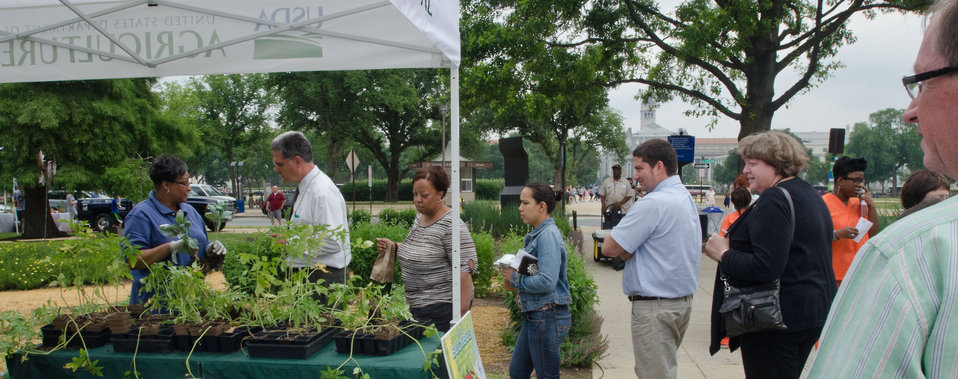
Agriculture Executive Master Gardner Judy Akinola, tries to keep up with long lines of people wanting ‘Abraham Lincoln’ Tomato plants during the giveaway of hundreds of fruit and vegetable seedlings to encourage people to get involved in community gardening and sharing their harvest with those in need, during the U.S. Department of Agriculture (USDA) summer farmers market opening of its 17th season at the USDA Whitten Building east parking lot in Washington, D.C. on Friday, May 31, 2012. USDA volunteers cultivated the seedlings. This year's theme is Grow, Healthy, Eat Healthy and Be Healthy. USDA and Fuel Up to Play 60, in partnership with the National Dairy Council and the National Football League, invited residence, visitors and local school children to participate in opening day activities. Hip Hop Public Health featuring Easy A.D. from Cold Crush Brothers and disk jockey Artie Green play music and invite people to get up on stage to dance or hula hoop to get active. D.C. Truck Farm helps people know from what plants, herbs, fruit and produce come from by giving tail-gate tours of the garden growing in the bed of their pickup truck. The Peoples Garden Initiative and USDA Executive Master Gardeners gave away a variety of fruit and produce seedlings to include the ‘Abraham Lincoln’ Tomato in celebration of the USDA 150th Anniversary and to share their harvest. New features for 2012 include an on-site sign language interpreter, a hand washing station, and a USDA-certified organic vendor. Other products selling today are fresh fruits, vegetables, herbs, baked goods, meats, kettle popcorn, local honey, hand-made soap and more.